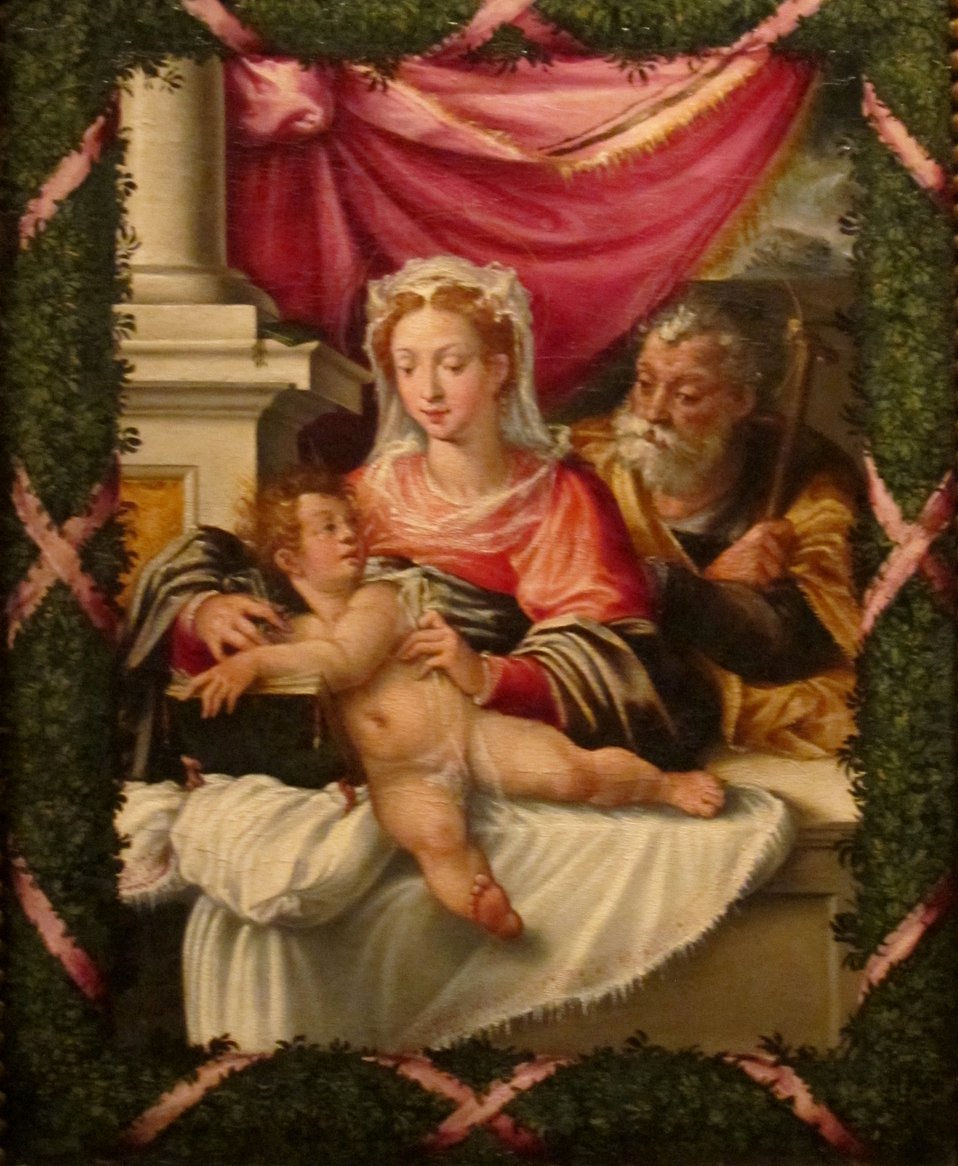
'The Holy Family' attributed to Michelangelo Anselmi, Dayton Art Institute